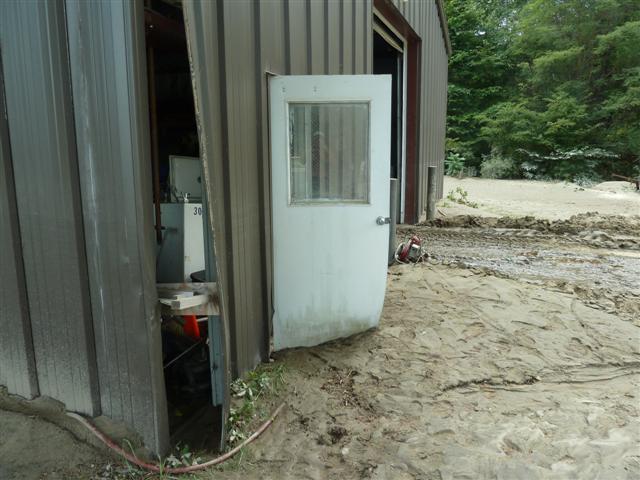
Damage at White River NFH - Bethel, VT

Damage to the storage building - exterior